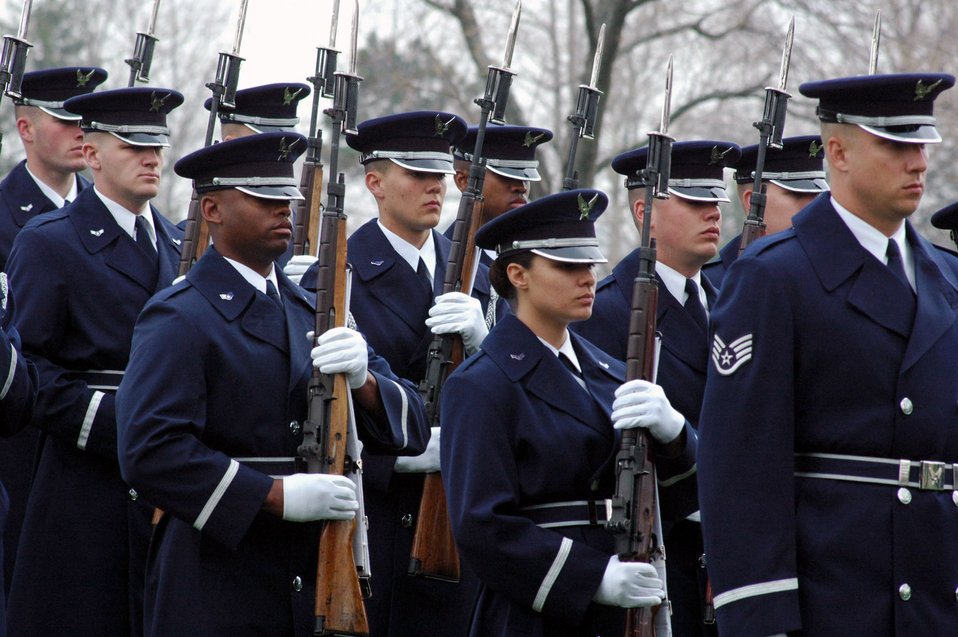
A final peace

The U.S. Air Force Honor Guard stands ready during the April 9 funeral for Maj. Robert F. Woods at Arlington National Cemetery, Va. Major Woods, a former pilot who crashed in Vietnam on June 26, 1968, was laid to rest nearly 40 years after he disappeared.